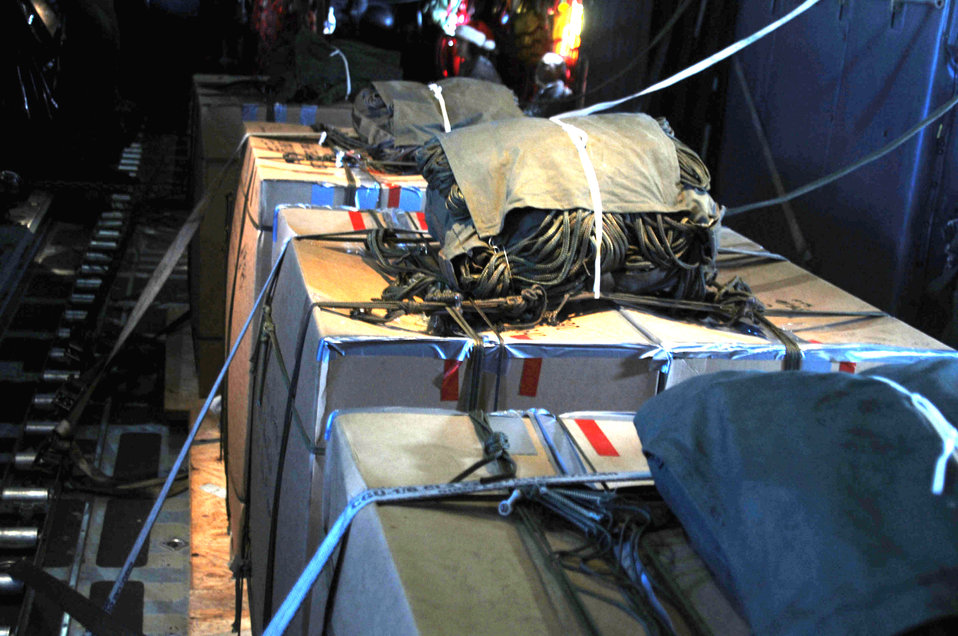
Airmen drop donated goods to islanders

Packs of donated goods wait to be airdropped to planned locations on the Chuuk Islands as part of Operation Christmas Drop Dec. 16, 2009. Operation Christmas Drop is celebrating its 57th anniversary of helping remote islanders. Airmen today continue the tradition delivering supplies to Yap, Palau, Chuuk and Pohnpei.